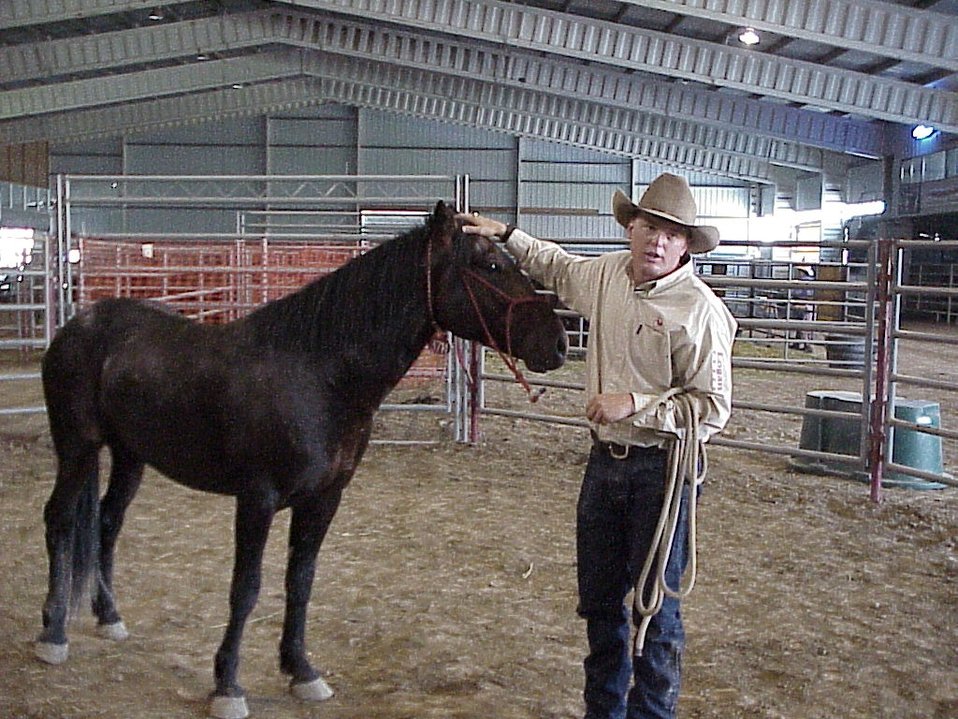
Horse Gentler Mario Johnson Lewiston Wild Horse and Burro Adoption Program Auction WHB indoor auction Cottonwood Field Office UCSC Upper Columbia Salmon Clearwater District